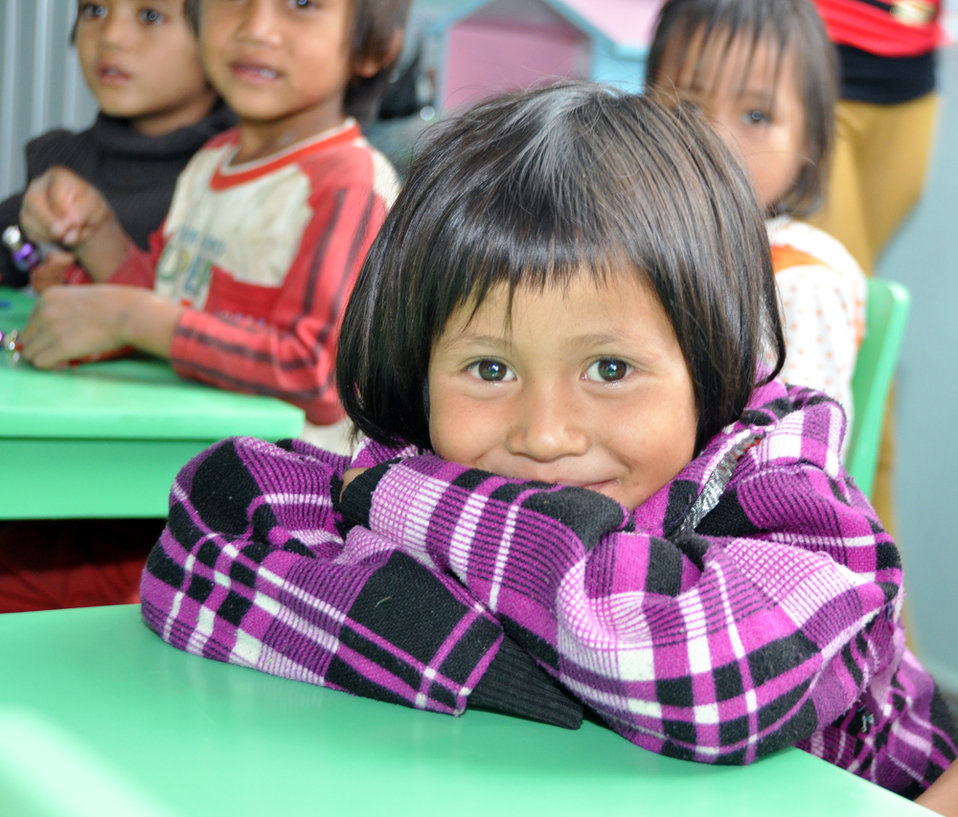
USAID contributes to refurbished pre-schools and teacher training in Vietnam